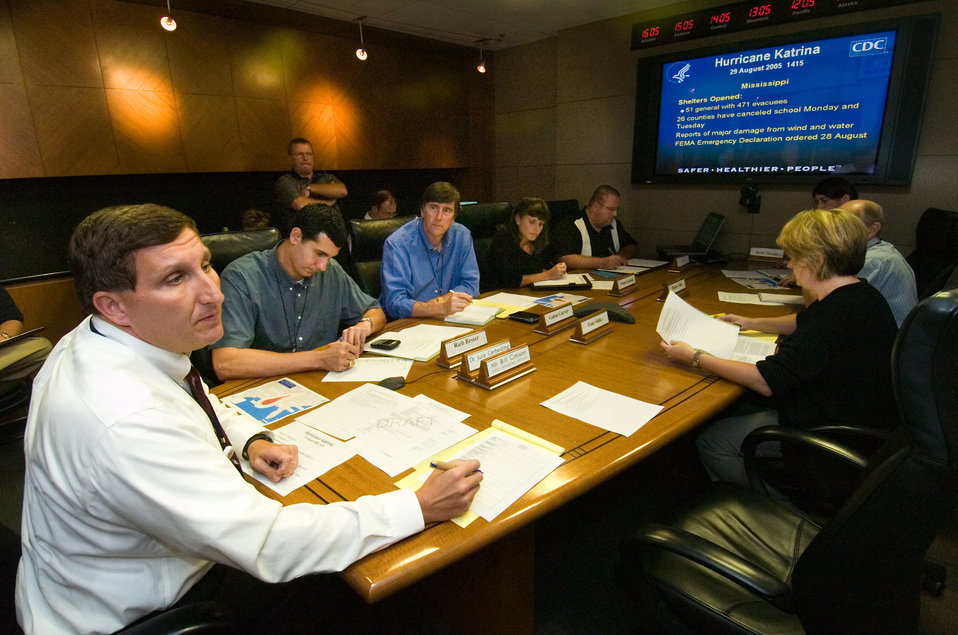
This photograph was taken during a CDC hurricane Katrina planning meeting in the Director's Emergency Operations Center (DEOC), which took place August 29, 2005.